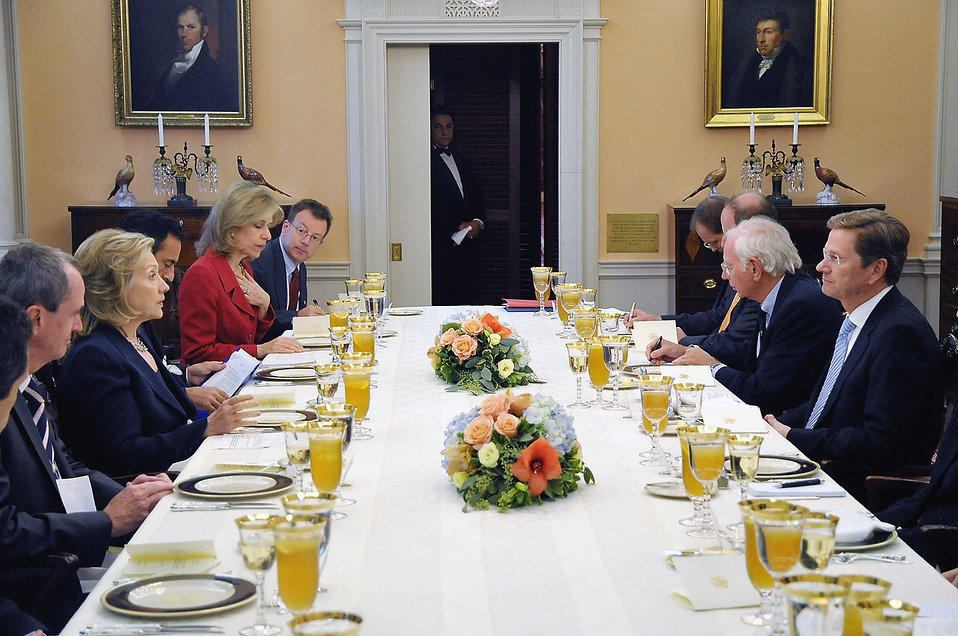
Secretary Clinton Delivers Holds a Working Lunch With German Foreign Minister Westerwelle

U.S. Secretary of State Hillary Rodham Clinton holds a working lunch with German Foreign Minister Guido Westerwelle at the U.S. Department of State in Washington, D.C., on September 29, 2010.